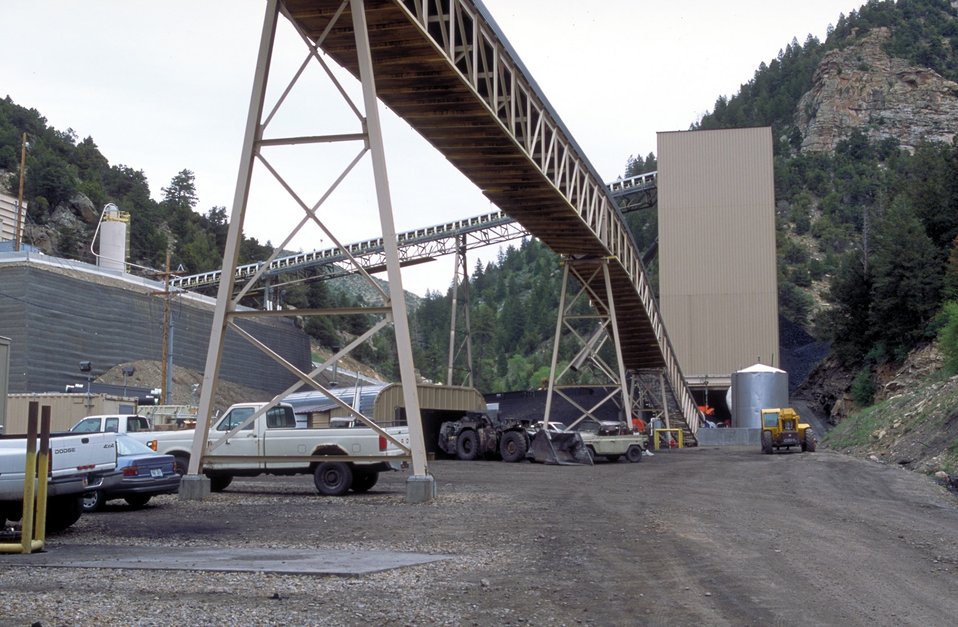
Coal production near Price, Utah.